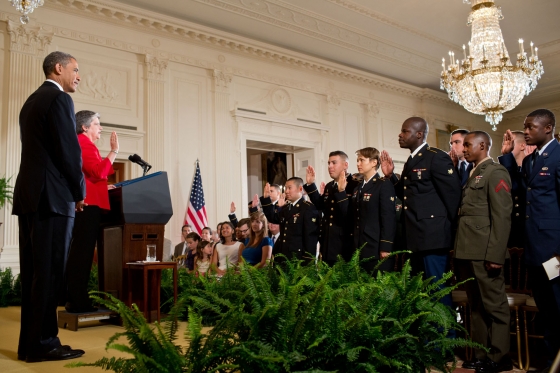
White House honors new citizens

President Barack Obama listens as Homeland Security Secretary Janet Napolitano administers the Oath of Allegiance during a military naturalization ceremony for active duty service members in the East Room of the White House, July 4, 2012.